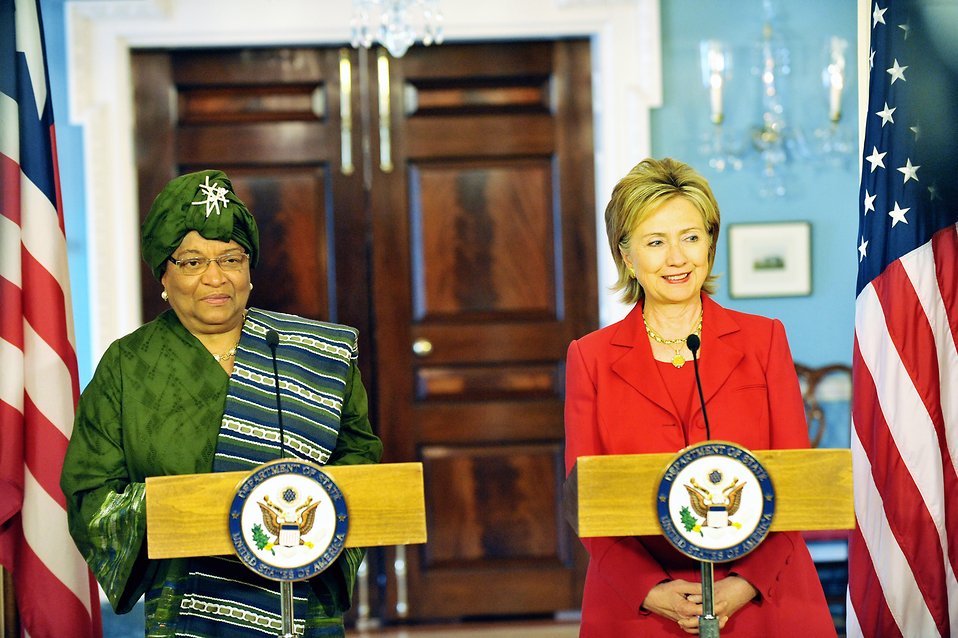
Secretary Clinton Meets With Liberian President

U.S. Secretary of State Hillary Rodham Clinton meets with Liberian President Ellen Johnson-Sirleaf at the U.S. Department of State in Washington, DC April 21, 2009.